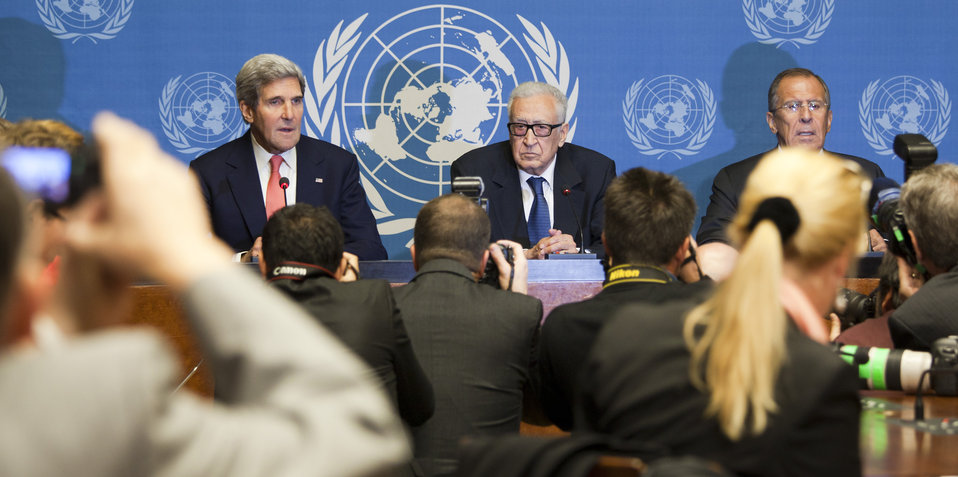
Secretary Kerry, Russian Foreign Minister Lavrov, UN Special Envoy Brahimi Address Press

U.S. Secretary of State John Kerry, United National Special Envoy for Syria Lakhdar Brahimi, and Russian Foreign Minister Sergey Lavrov discuss efforts to reach a political settlement in the Syrian civil war during a news conference at UN headquarters in Geneva, Switzerland, on September 13, 2013.